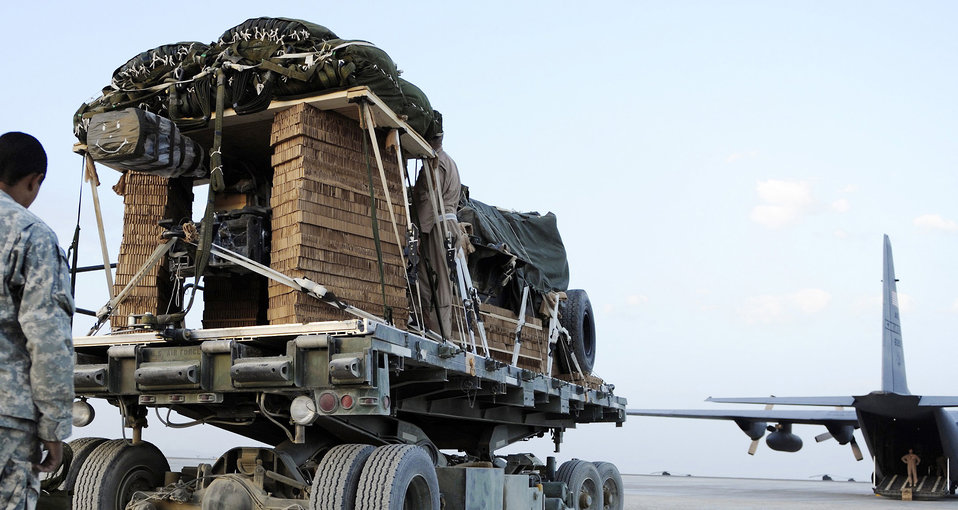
Total-force team airdrops 10-ton artillery load

A joint Army and Air Force team loads a 10-ton pallet aboard a C-130 Hercules aircraft Aug. 8 at Bagram Airfield, Afghanistan. The total force aicrew from the 774th Expeditionary Airlift Squadron delivered an M198 howitzer artillery piece to a forward operating base in Afghanistan. The 36-foot long cannon will give troops the ability to send high-explosive shells at insurgents threatening the peace and security of the Paktika Province.